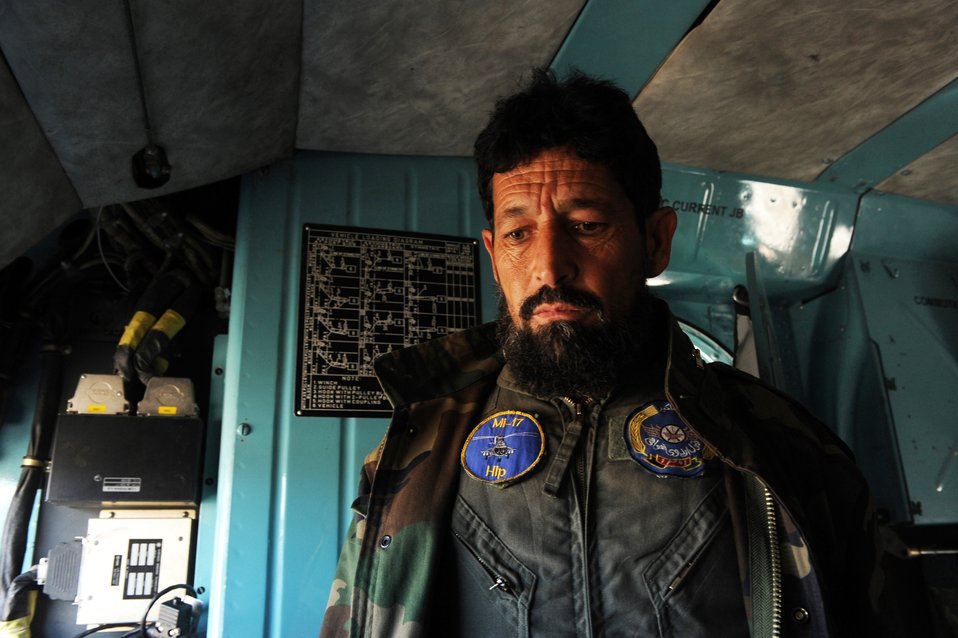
Afghanistan National Army Air Corp flight engineer waits for passengers to board an Mi-17 helicopter

An Afghanistan National Army Air Corp flight engineer waits for passengers to board an Mi-17 helicopter during a joint U.S. and Afghan sortie Jan. 7, 2010 at Forward Operation Base Tarin Kowt. The Mi-17 sortie was flown by pilots from the 437th Air Expeditionary Advisory Squadron and ANAAC pilots. Afghanistan National Army Air Corps soldiers delivered 30 passengers and one pallet of cargo destined for 82nd Airborne Soldiers with the 508th Parachute Infantry Regiment at Forward Operating Base Tarin Kowt.